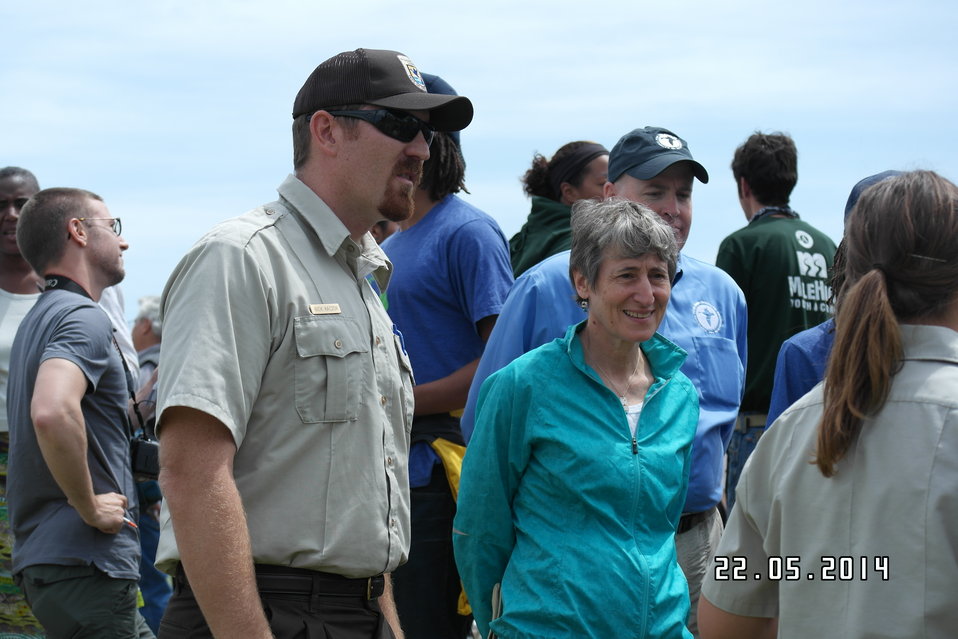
Secretary Jewell Announces $6.7 for Youth Conservation Job

Interior Secretary Sally Jewell helps local youth conservation groups plant cottonwood trees at Rocky Mountain Arsenal National Wildlife Refuge.